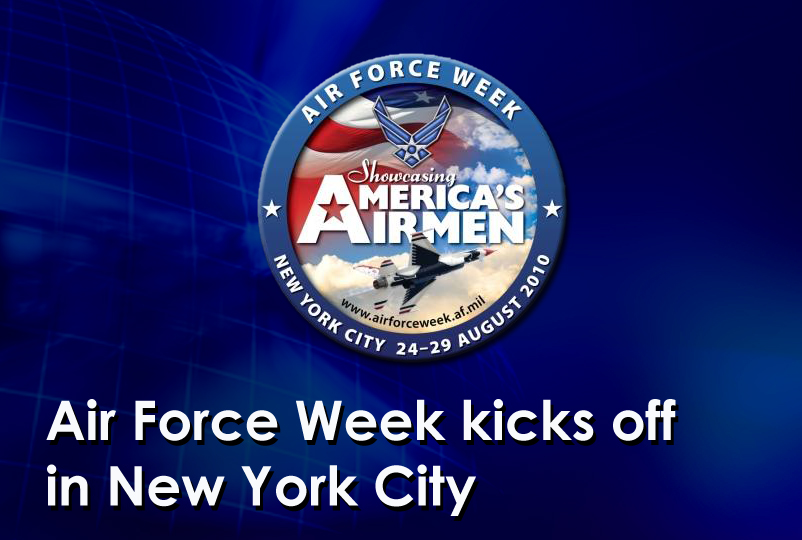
Air Force Week kicks off in New York City